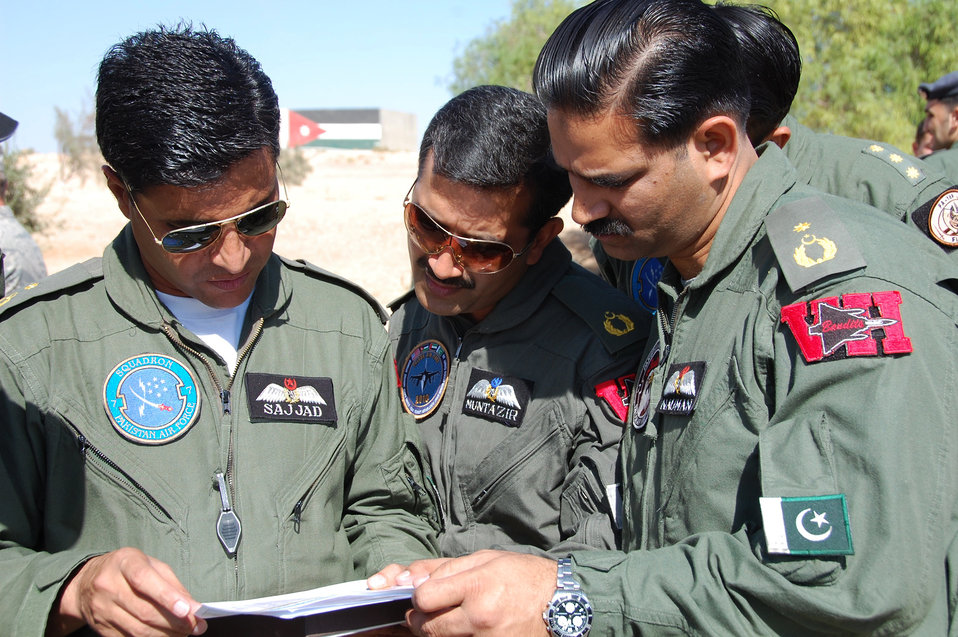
Jordan US exercise

Pakistani contingent members discuss flight plans Nov. 2, 2010, after wrapping up Falcon Air Meet 2010 ceremonies in Azraq, Jordan. The air forces of Pakistan, Jordan, the U.S. and United Arab Emirates competed in the annual two week event in Jordan hosted by the Royal Jordanian Air Force. The overall winners of the competition were the members of the Royal Jordanian Air Force team.